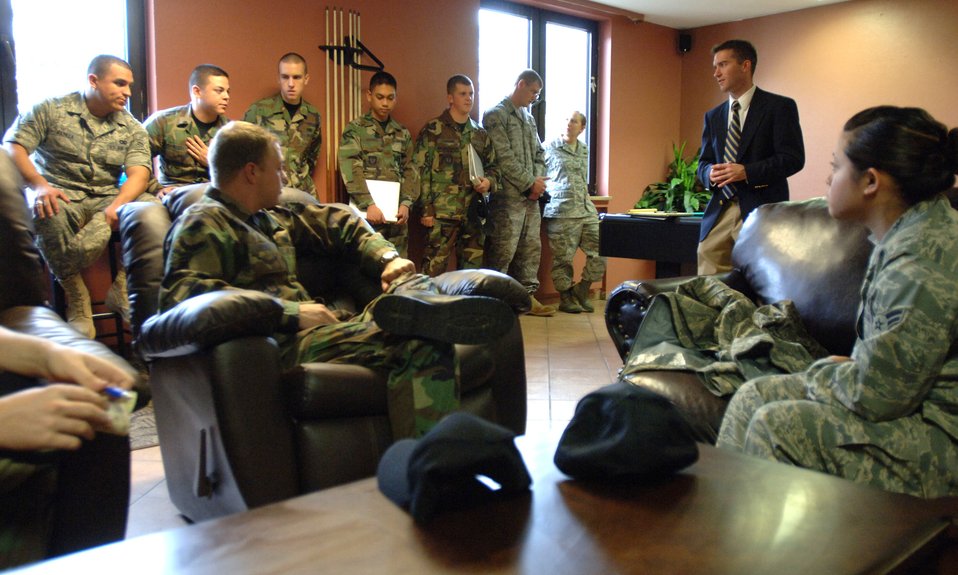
Congressional team evaluates Airmen's living quarters

Adam Johnson (second from right) meets with 25 Airmen representing the Kaiserslautern Military Community dorm council to assess the quality of unaccompanied housing offered to single servicemembers Oct. 16 in Kaiserslautern, Germany. The visit was part of a Department of Defense-wide investigation that canvassed nearly 60 installations worldwide. Mr. Johnson is a House Appropriations Committee staff delegate.